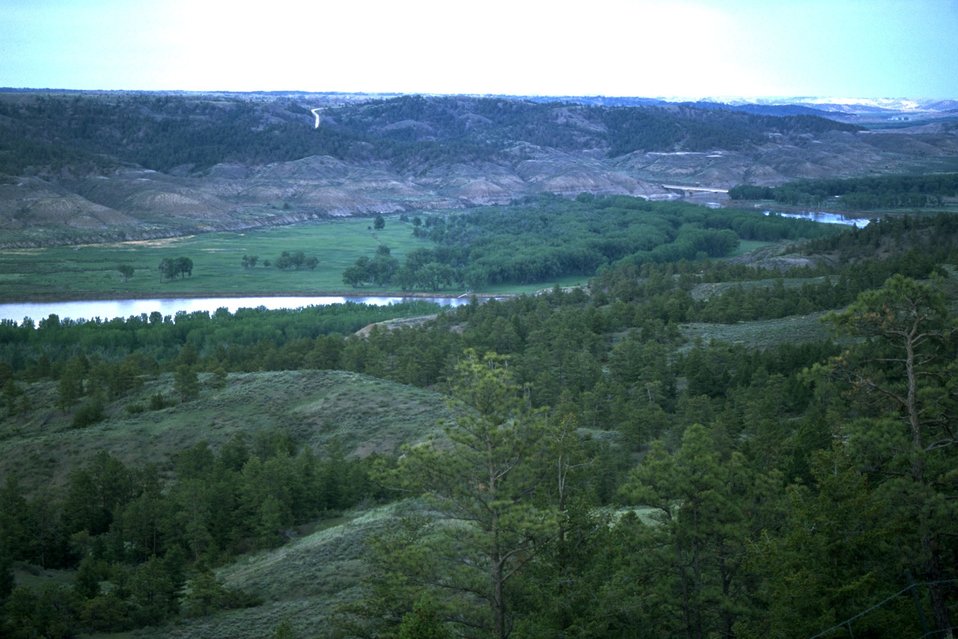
Scenic view of the riparian area in the Missouri Breaks